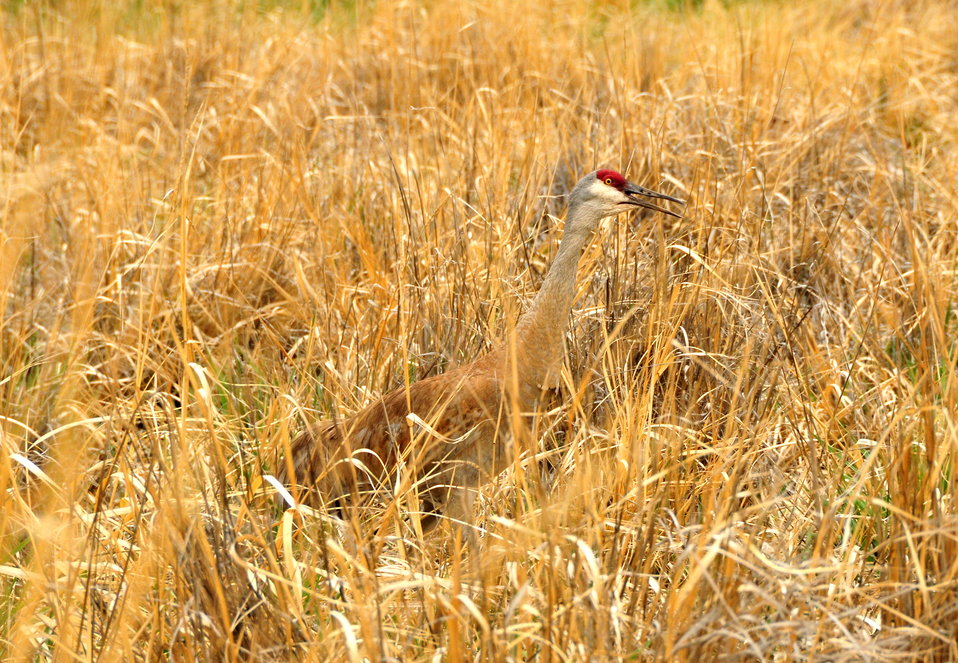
Greater sandhill crane on Seedskadee National Wildlife Refuge 01

A greater sandhill crane adult calls out to its mate and two newly hatched colts. The adults were taking the colts on one of their first foraging forays.